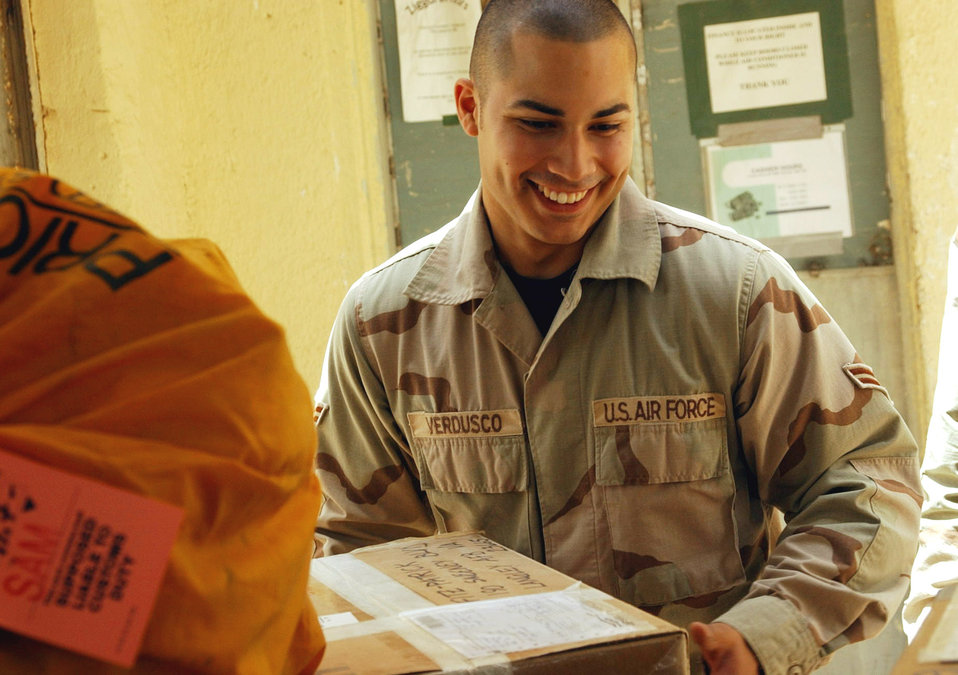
The mailman delivers

TALLIL AIR BASE, Iraq -- Airman 1st Class Gary Verdusco helps keep packages moving to airmen stationed here. Mail is delivered daily to the Air Force's post office, and a 10-person team works seven days a week to make sure letters and packages get to their intended recipients. Verdusco is a postal finance clerk assigned to the 407th Expeditionary Communication Squadron.